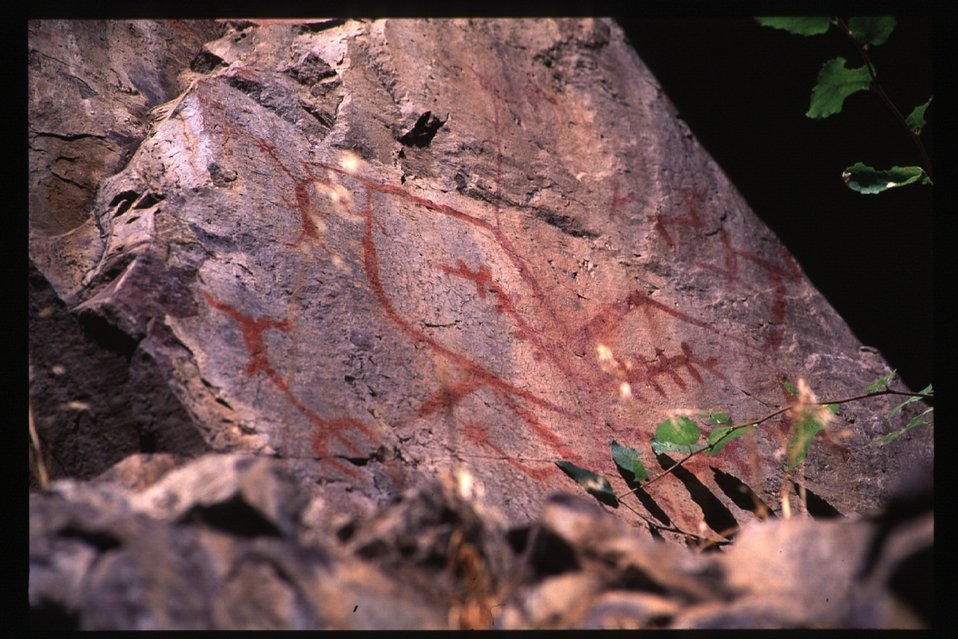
Petroglyphs Lower Salmon River Cottonwood Field Office UCSC Upper Columbia Salmon Clearwater District